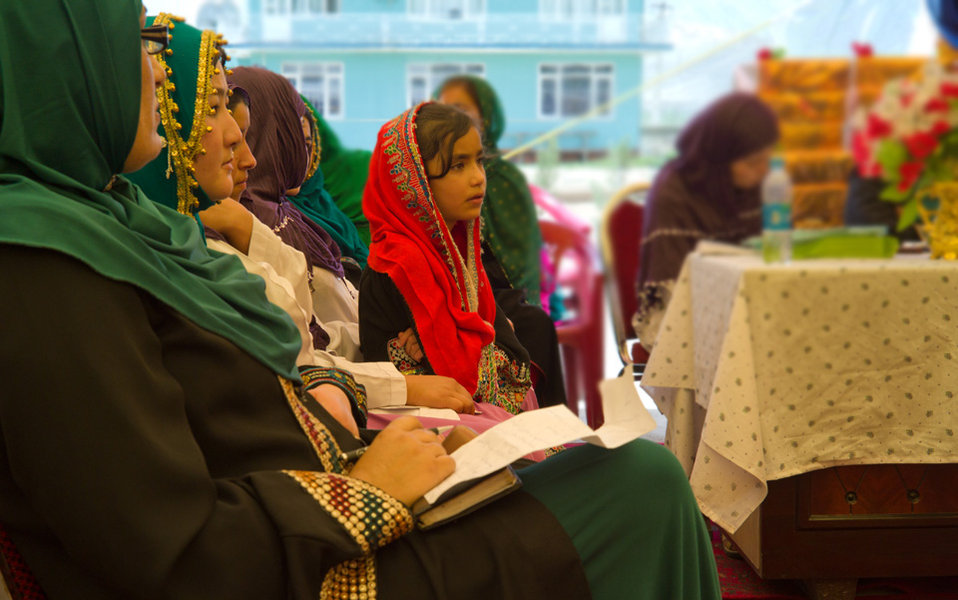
Little girl